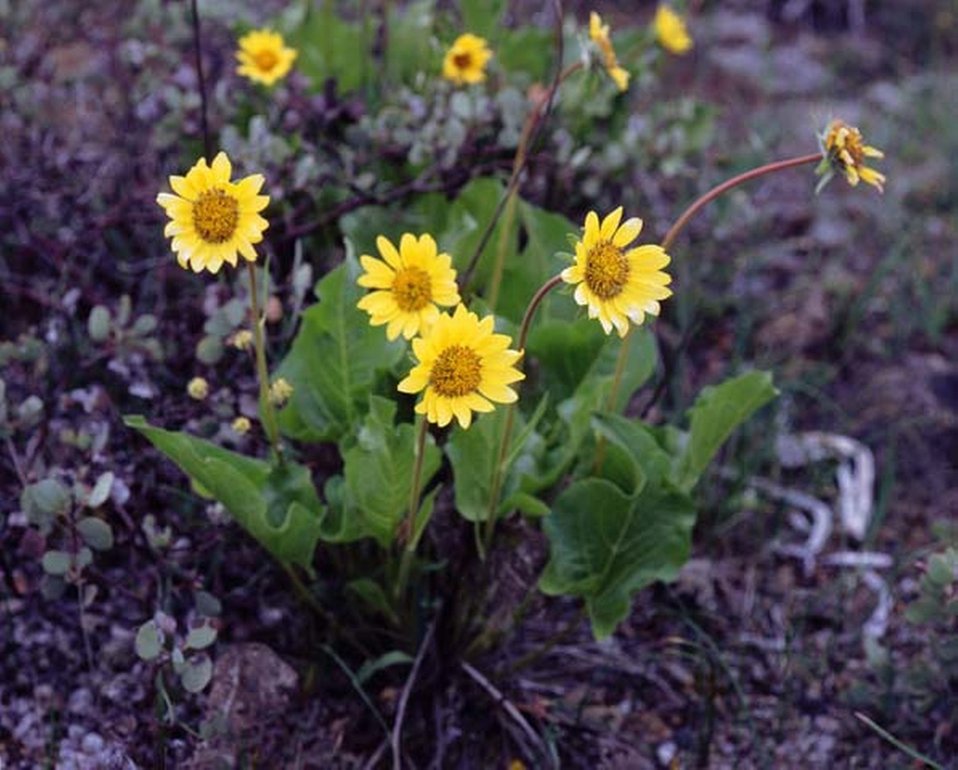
Medium shot of Sunray wildflower (Encelopsis nudicaulis).